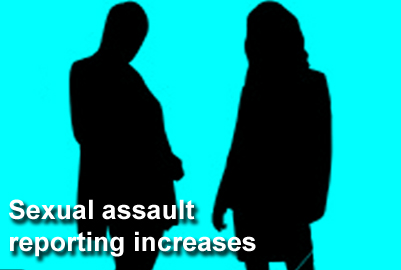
Sexual assault reporting increases